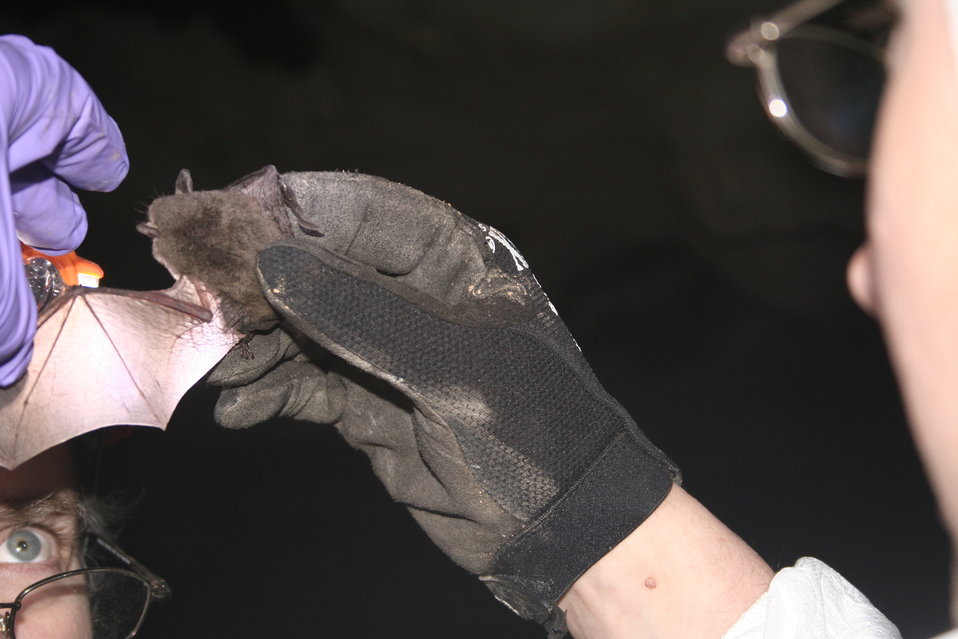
Researcher inspects bat wing for signs of WNS